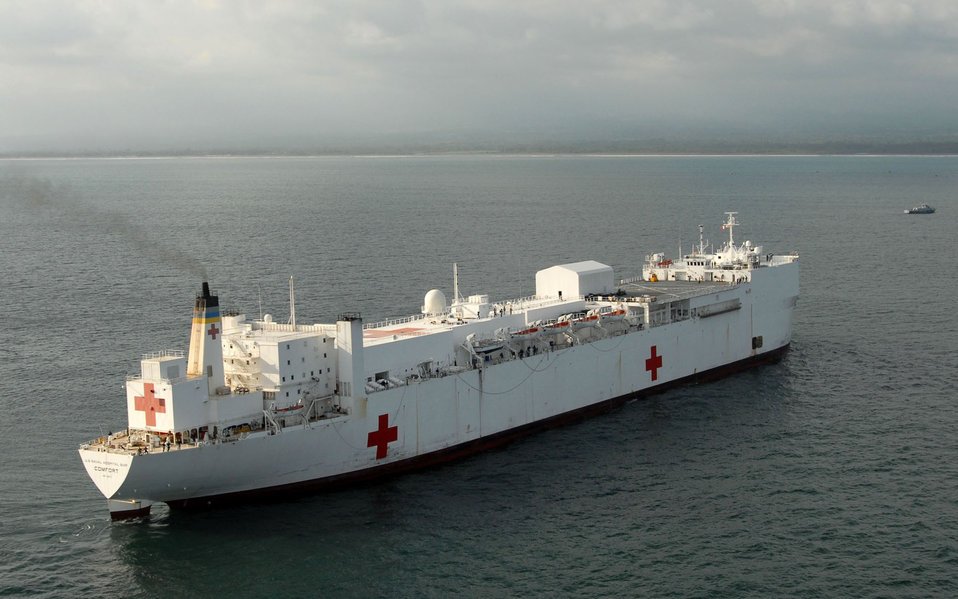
Arrival of Comfort broadens military's mission in Haiti

The USNS Comfort, a military hospital ship, adds some 600 medical personnel for the Haitian relief effort.